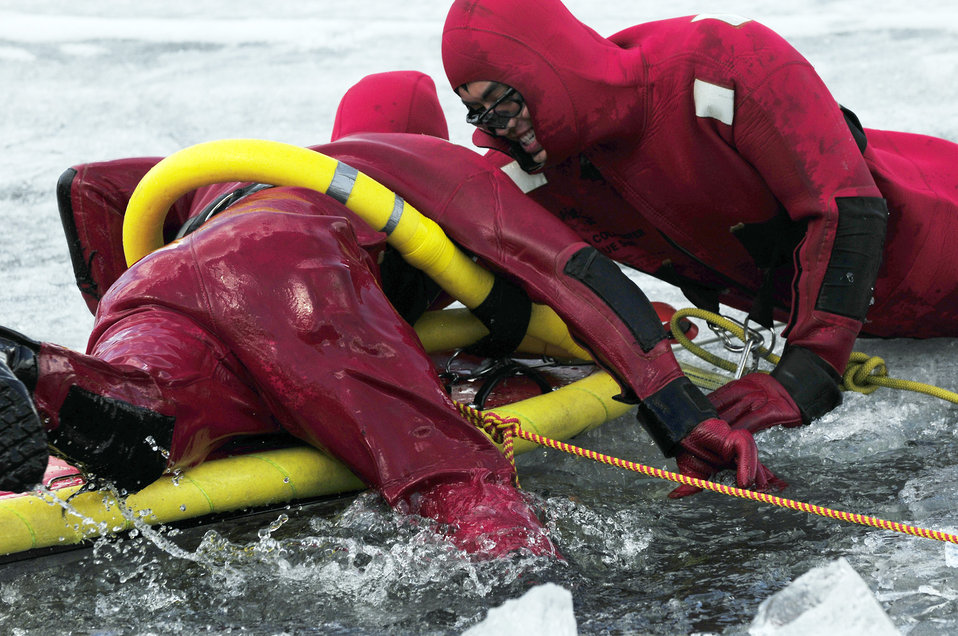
Firefighters train in icy lake

Airman 1st Class David Piasecki climbs out of a frozen lake onto a life raft that Senior Airman Bao Hoang stabilizes with his body during icy water rescue training May 6, 2011, at Eielson Air Force Base, Alaska. Airmen Hoang and Piasecki are fire fighters assigned to the 354th Civil Engineer Squadron Fire Protection Flight.